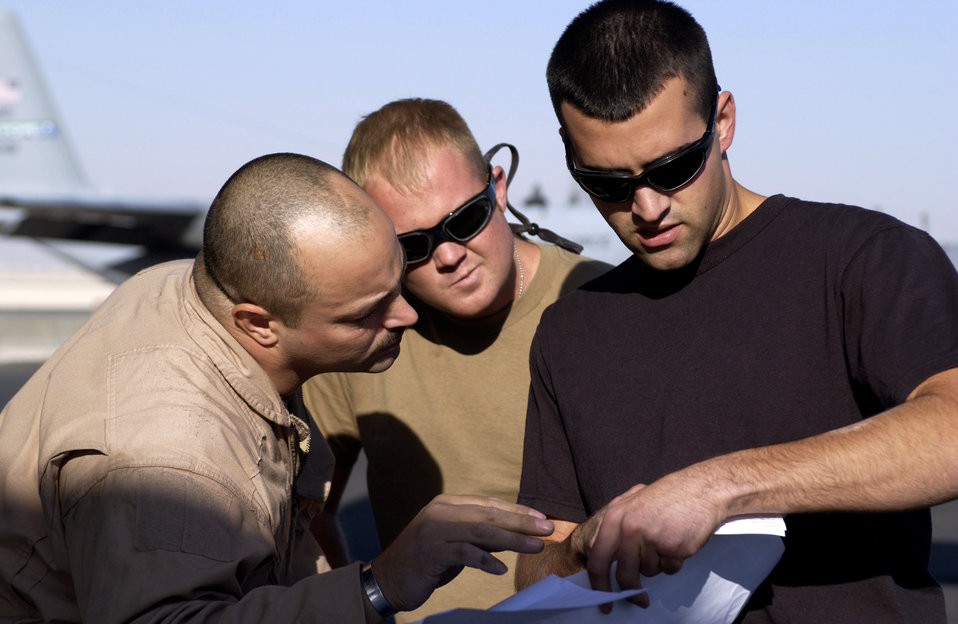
Checking the list - twice

SOUTHWEST ASIA -- Tech. Sgt. Bryan Quinn (left) goes over paper work with other Airmen prior to loading equipment onto a C-130 Hercules at a forward deployed location here Dec. 4. The C-130s are supporting both operations Iraqi Freedom and Enduring Freedom.